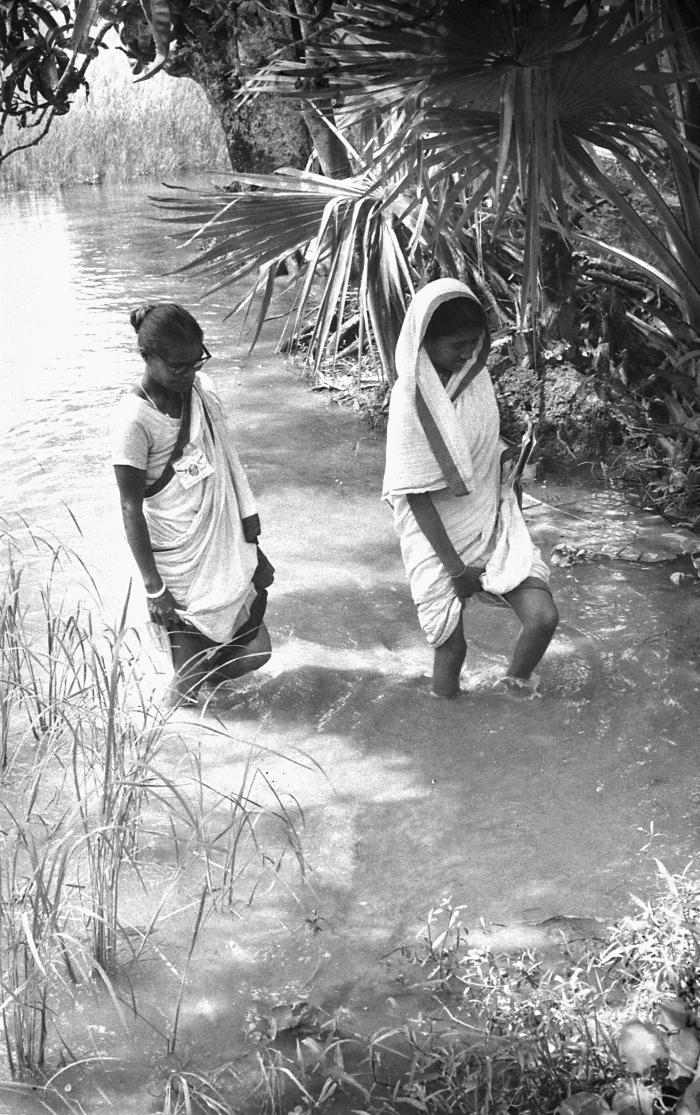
These two local Bangladesh women were working as community smallpox eradication team volunteers, as they marched from house to house in search of any smallpox cases, and the family members, or neighbors who were determined to be in close proximity to such cases.Local residents who became resident vaccinators, played a profound role in achieving a successful outcome to the eradication program. Once located, the names of those residents who were ill, or had been in close proximity to those who had smallpox, i.e., within one half mile, were added to the smallpox eradication Containment Book. The book kept track of those with disease, and those who'd been vaccinated, and allowed team members to closely follow these 'patients' in order to see that the vaccination was successful, or the smallpox patient was improving as desired.